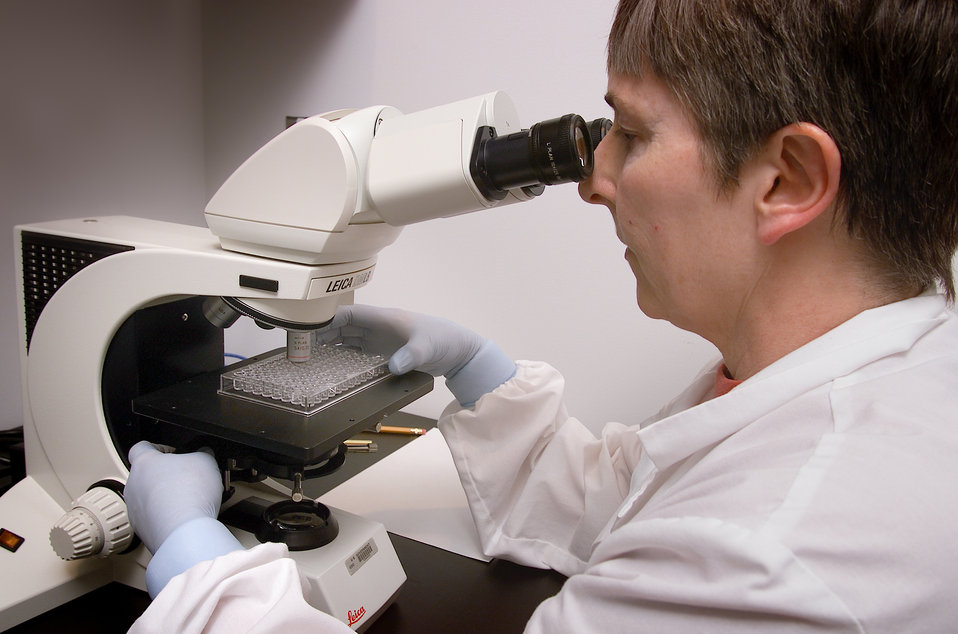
Sandra Bragg, Ph.D., of the Centers for Disease Control's Meningitis and Special Pathogens Branch (MSPB) in the National Center for Infectious Diseases (NCID), was shown seated in front of a microscope, as she was reading a Microscopic Agglutination Test (MAT) by using dark field microscopy.